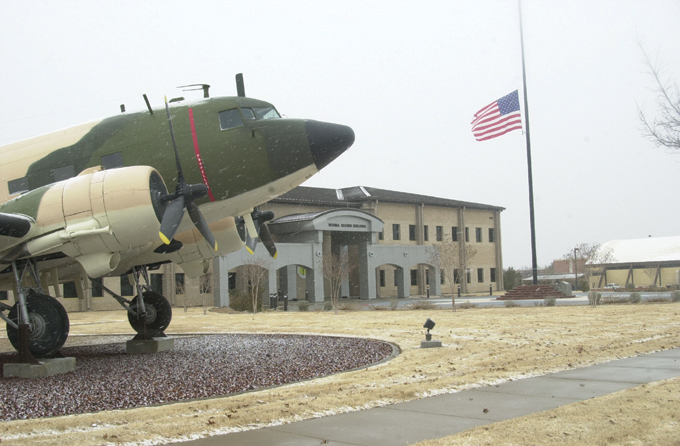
Goodfellow Air Force Base

The Norma Brown Building at Goodfellow Air Force Base, Texas.